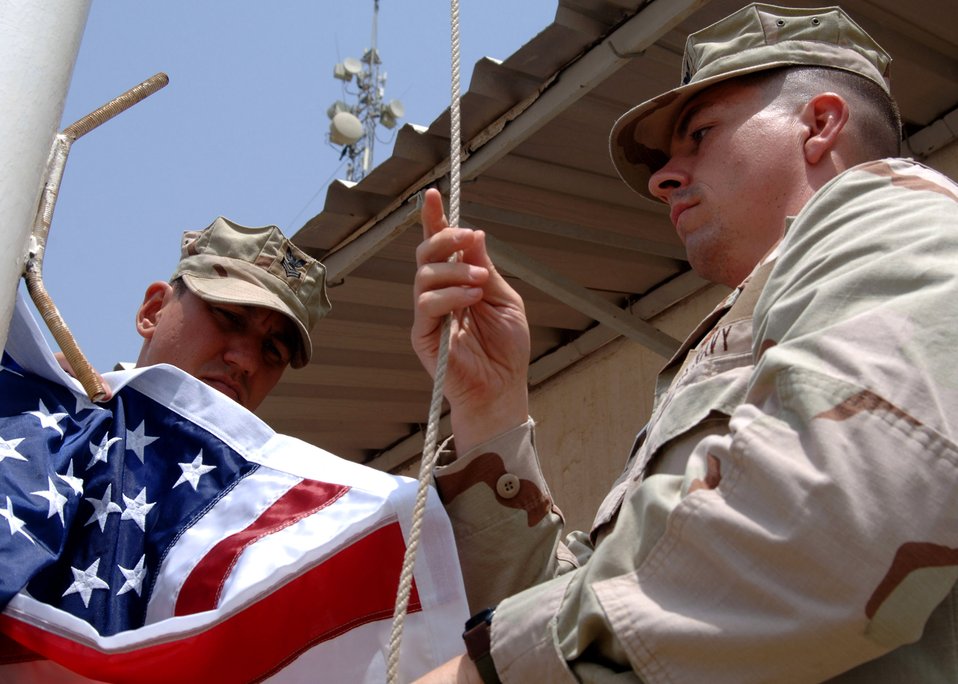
Sept. 11 remembered in Djibouti

Navy Petty Officer 1st Class David Trimble and Navy Petty Officer 1st Class Wayne George raise a flag Sept. 11 over Camp Lemonier, Djibouti. The flag was purchased by servicemembers deployed to Combined Joint Task Force-Horn of Africa in remembrance of Sept. 11, 2001.